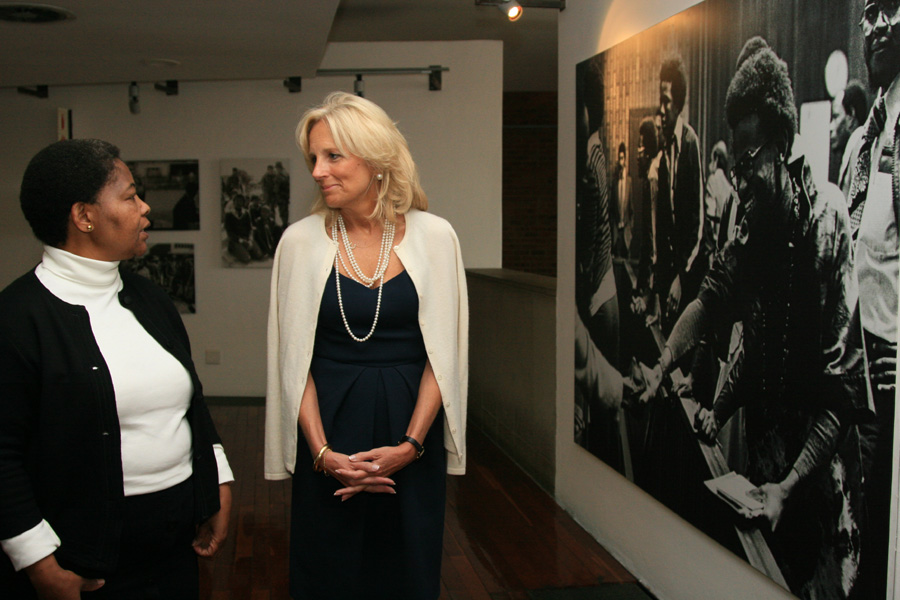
Dr. Jill Biden Visits Hector Pieterson Museum

Dr. Jill Biden, wife of Vice President Joseph Biden, visits the Hector Pieterson Museum in Soweto, South Africa, on June 12, 2010.